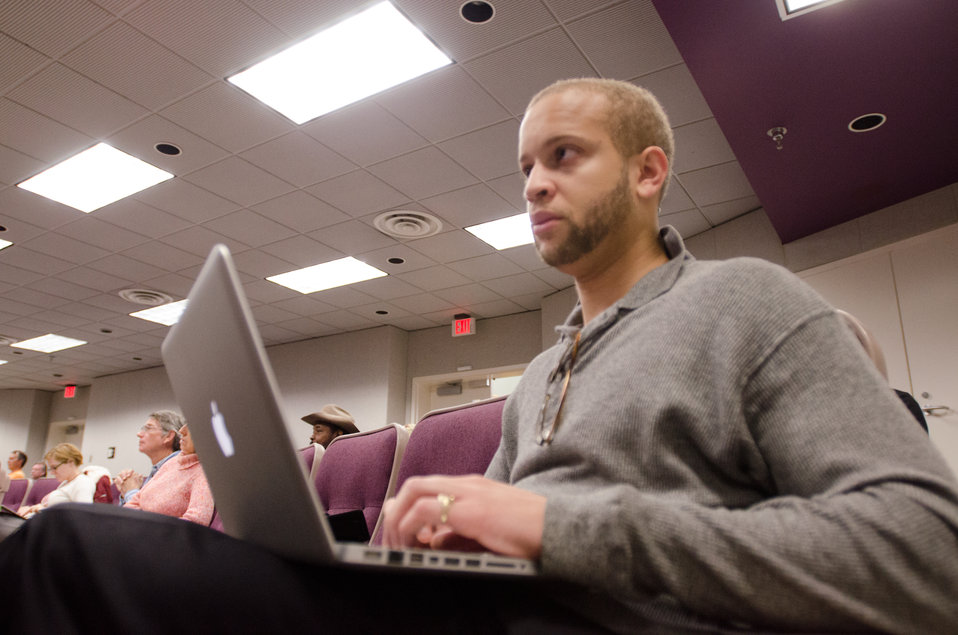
Farmers listened, questioned, took notes and gained a better understanding of resources available to them, at the “Virginia State University (VSU), U.S. Department of Agriculture (USDA) and Virginia Farmers Working Together” outreach workshop in the VSU, L. Douglas Wilder building on Thursday, March 7, 2013, in Petersburg, VA. Farmers shared and learned new ways to produce more and conduct better practices and planning of their family agriculture businesses.